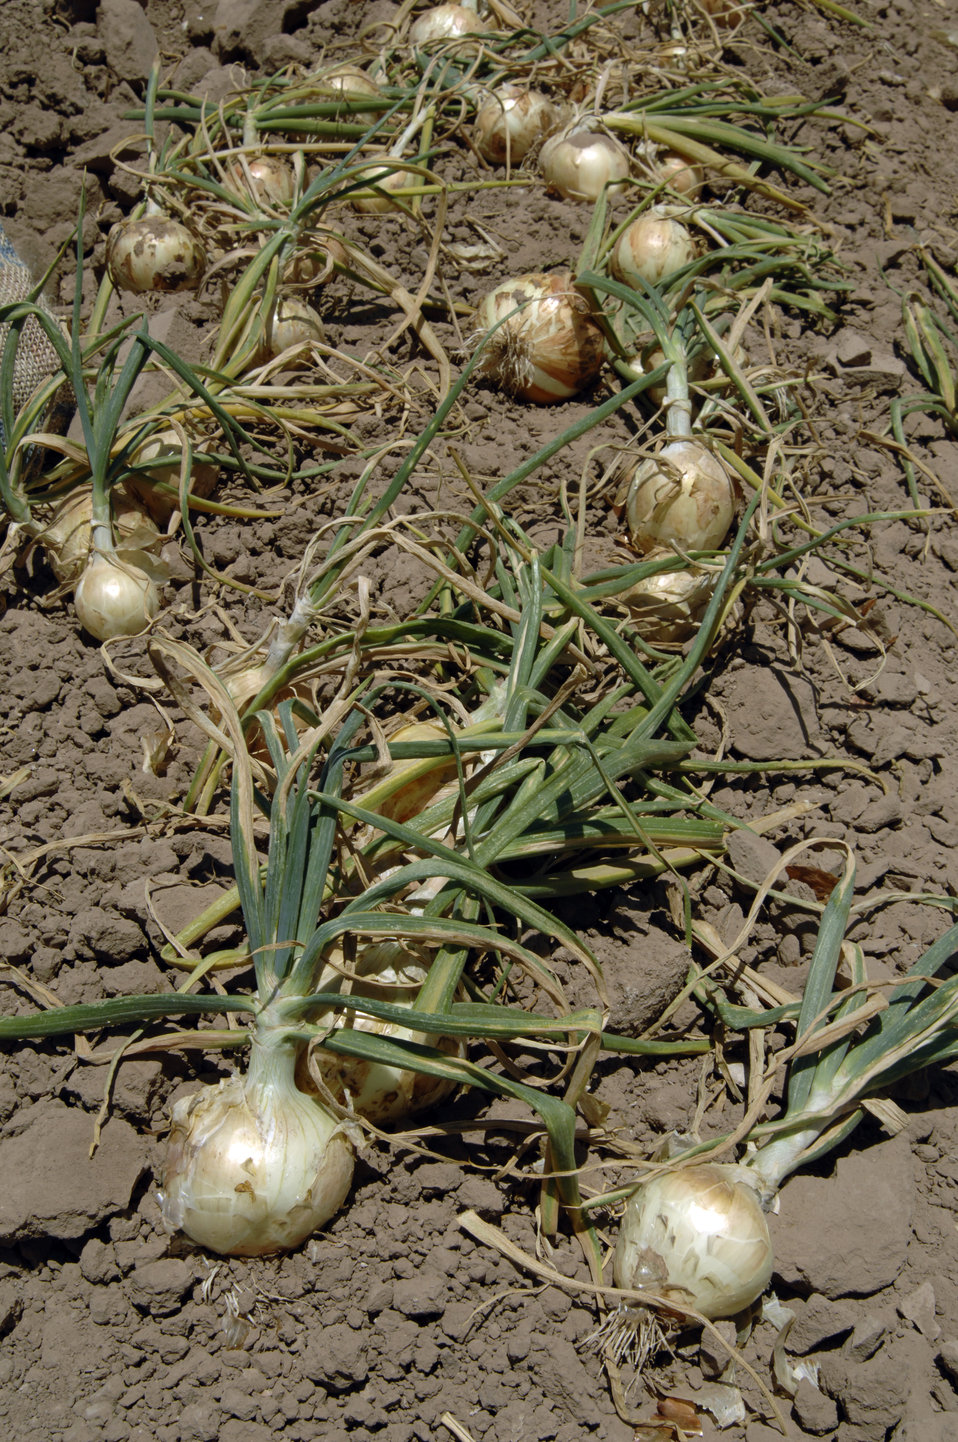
The U.S. Department of Agriculture's (USDA) Cooperative State Research, Education, and Extension Service (CSREES) administers the Rio Grande Basin Initiative (RGBI) in New Mexico in cooperation with the Texas AgriLife Extension Service, Texas AgriLife Research, the College of Agriculture and Life Sciences at Texas A&M University, and New Mexico State University on June 2, 2008. This project addresses water management throughout the Rio Grande Basin, bringing together research, extension, and education efforts to address local, state, regional, national, and international water concerns. Unlike the cement-lined canals that prevent leeching, the earthen acequias allow seepage into groundwater. Acequias are the traditional irrigation ditches or canals in New Mexico. Research has found that the seepage is not wasted but has an added benefit to the environment. The seepage promotes riparian buffers, cleaner groundwater and a more efficient storage of water. The improved irrigation has improved crop production as evidenced by the improved growth and quantity onions on a local farm.